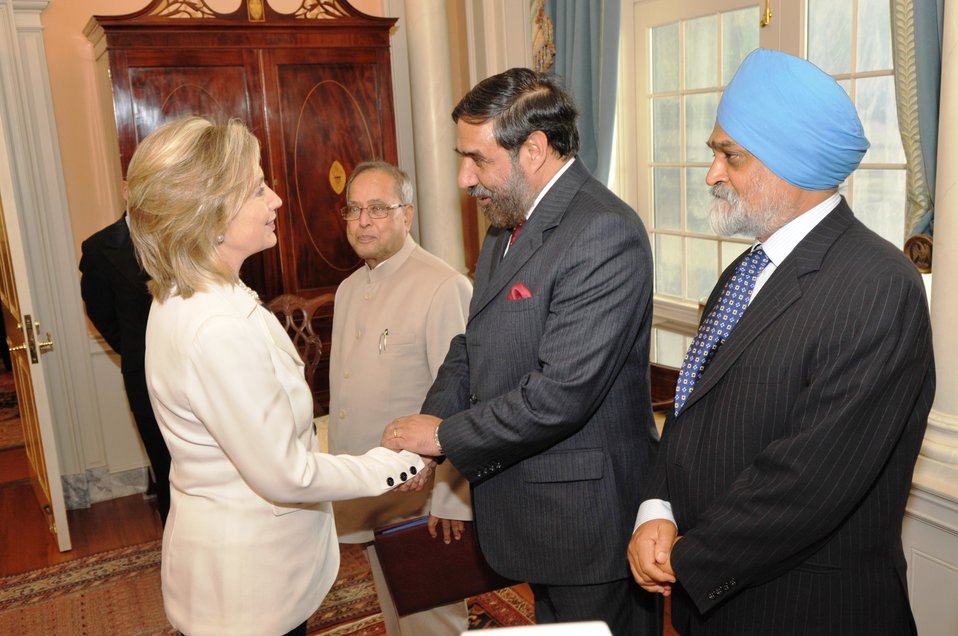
Secretary Clinton Shakes Hands With Indian Commerce Minister Anand Sharma

U.S. Secretary of State Hillary Rodham Clinton shakes hands with Indian Commerce Minister Anand Sharma at the U.S. Department of State in Washington, D.C., on June 22, 2010.